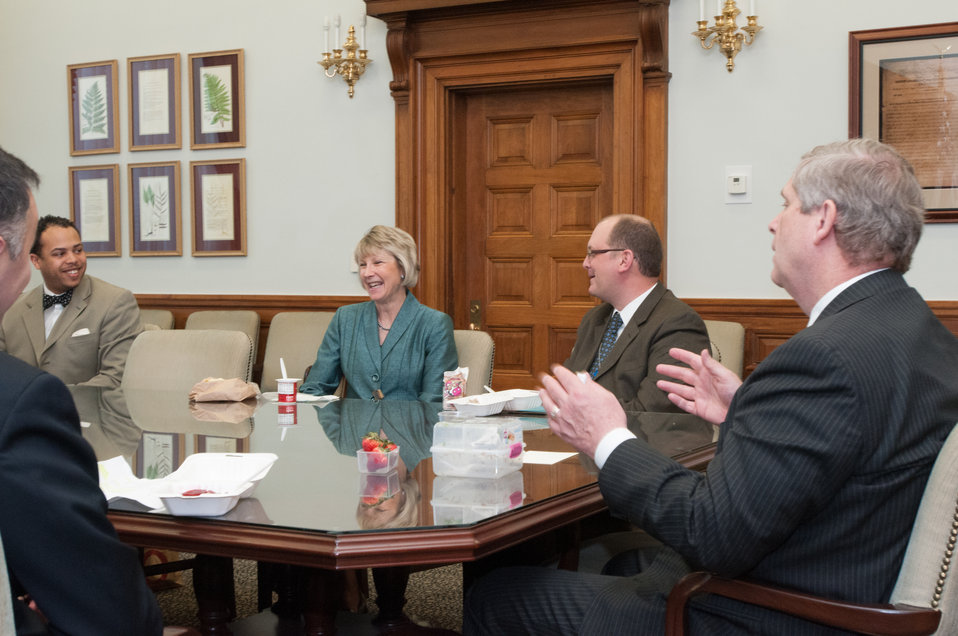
U.S. Department of Agriculture (USDA) Foreign Agricultural Service (FAS) Senior Advisor Patrick Kerrigan, left to right; Farm Service Agency (FSA) Confidential Assistant Leigh Allen; Food, Nutrition and Consumer Services (FNCS) Special Assistant to the Under Secretary Brenda Lisi; Office of Ethics Branch Chief Ed Peterman, and Agriculture Secretary Tom Vilsack, meet to discuss the roles they play within the department, during a Brown Bag Lunch that Secretary Vilsack periodically has with employees, in his conference room, on Tuesday, April 9, 2013, in Washington, D.C.